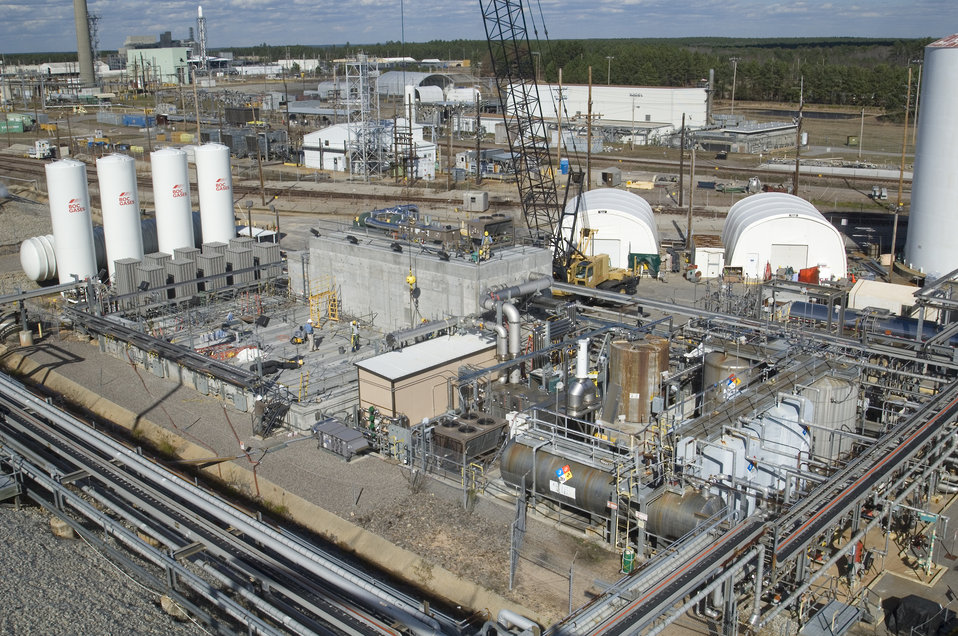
Savannah River Site Contractor Achieves a Tank Waste Milestone

Pictured here is a component of the Interim Salt Disposition Process — known as Modular Caustic Side Solvent Extraction Unit (MCU) — that helped Savannah River Remediation process more than 500,000 gallons of salt waste since October last year, a contract milestone.